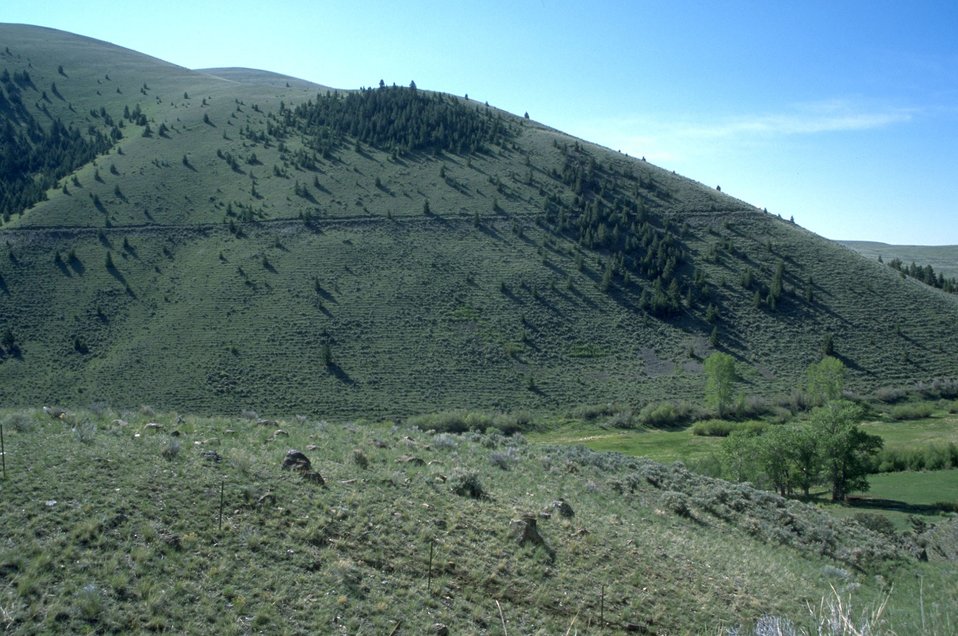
Road cutting around a green hillside